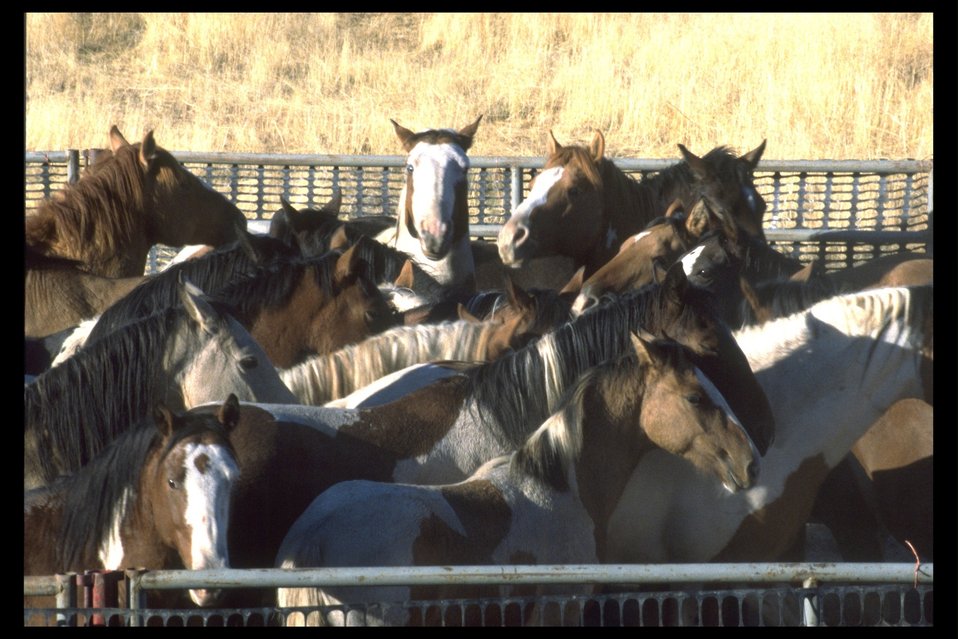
Undetermined.